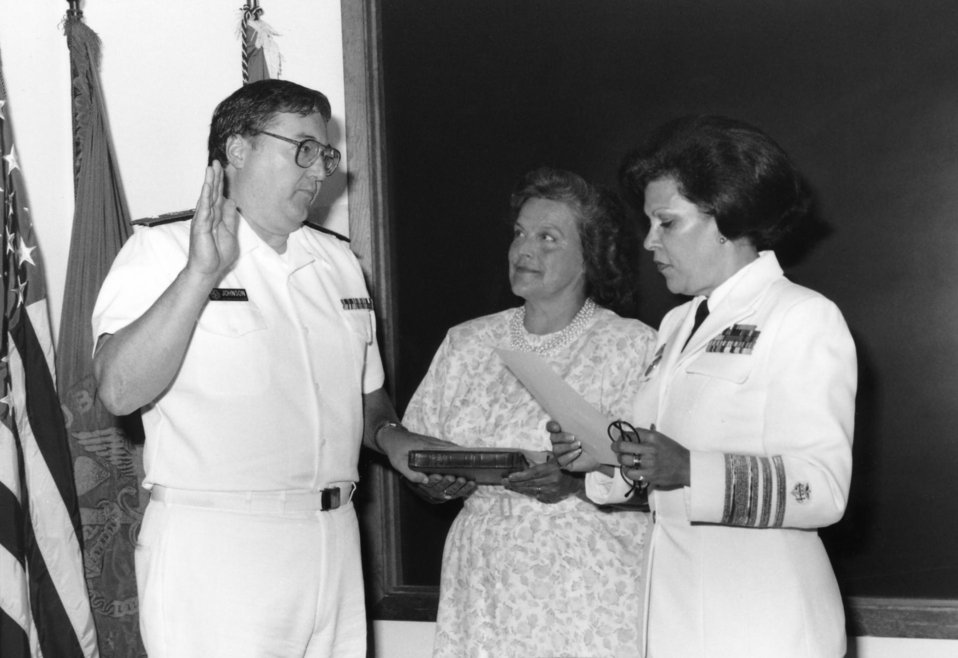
This 1991 photograph depicted U.S. Surgeon General, Antonia C. Novello, M.D., M.P.H. (1990 - 1993) (right), as she was presiding over the swearing-in ceremony at the Centers for Disease Control for Barry L. Johnson, Ph.D. (left), as the Assistant Administrator for the Agency for Toxic Substances and Disease Registry (ATSDR).